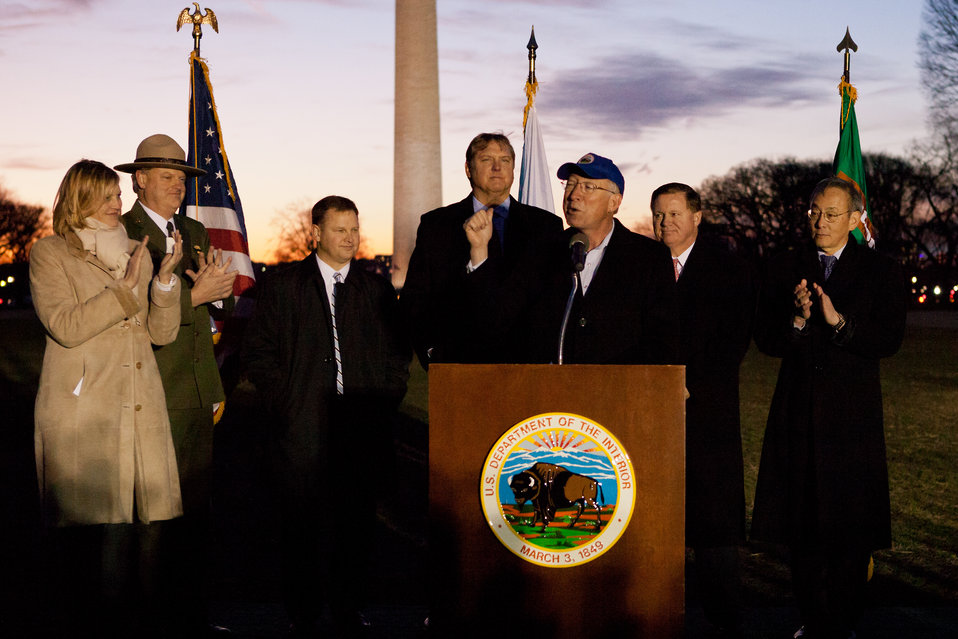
Interior Secretary Ken Salazar speaks about cost savings, job creation and other benefits that LED lighting has afforded the National Parks Service.